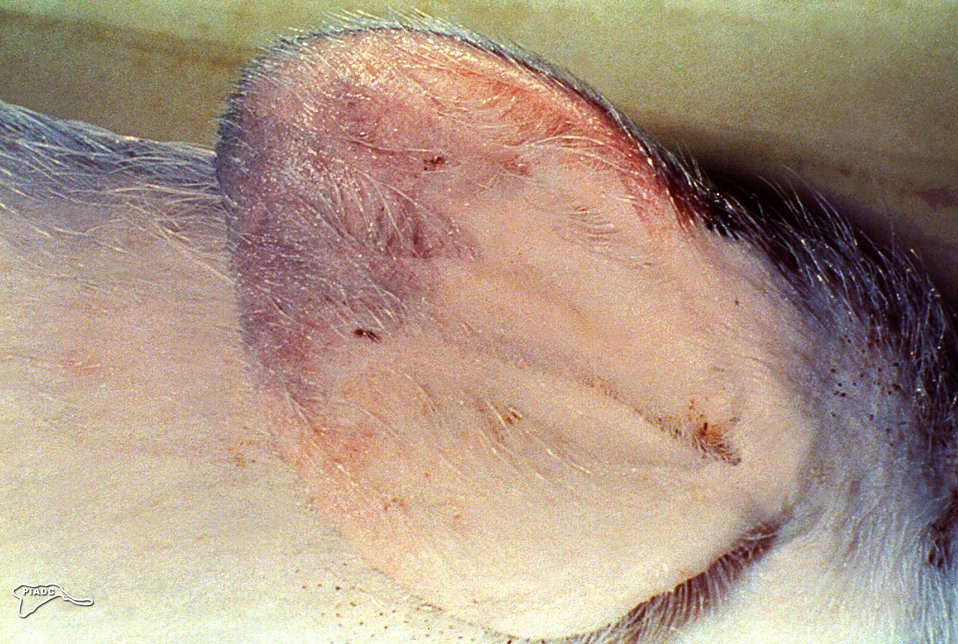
From the 'Illustrated Manual for the Recognition and Diagnosis of Certain Animal Diseases', published in 1982, by the Mexico-United States Commission for the Prevention of Foot and Mouth Disease, this photograph depicts a domesticated pig that was exhibiting symptoms indicative of African swine fever (ASF), which included these cyanotic changes seen at the tip of its right ear.